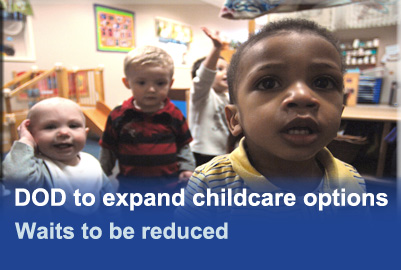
DOD Childcare

DOD to expand childcare options